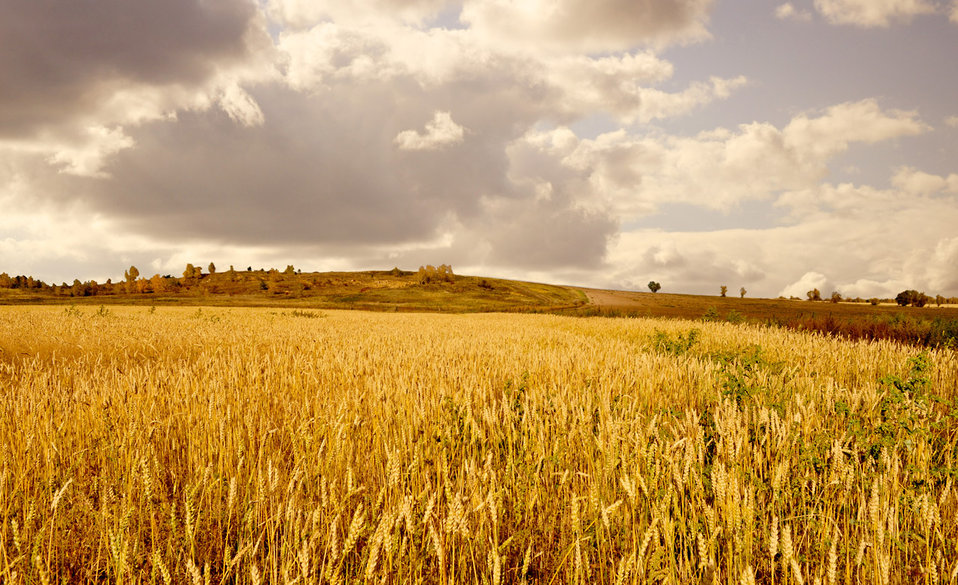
Gold fields

Wheat field on a background of clouds.